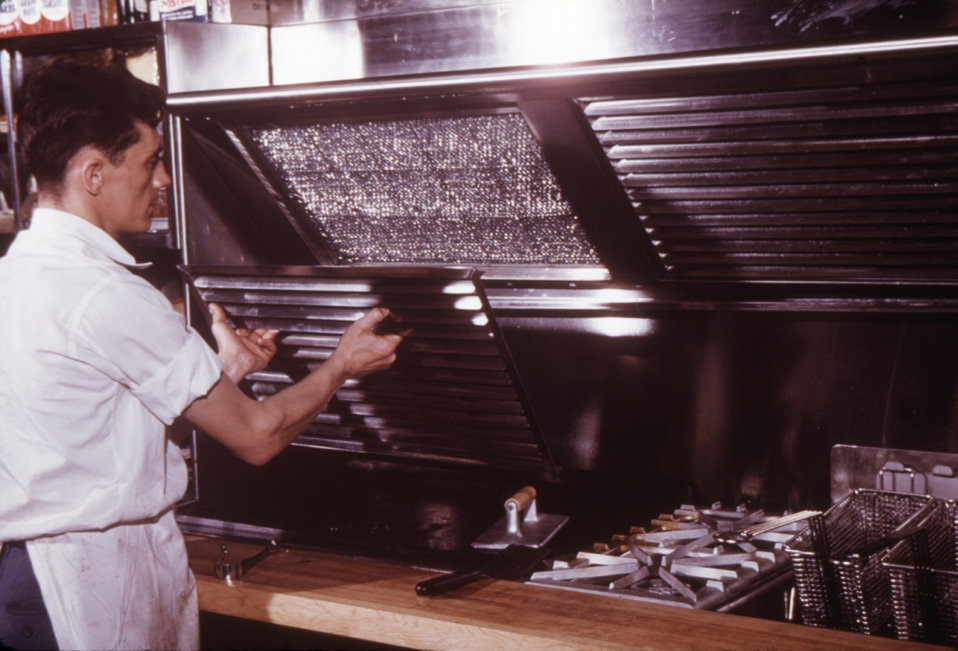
This was an example of a clean kitchen ventilation system found during an inspection of migrant labor camp sanitary conditions.